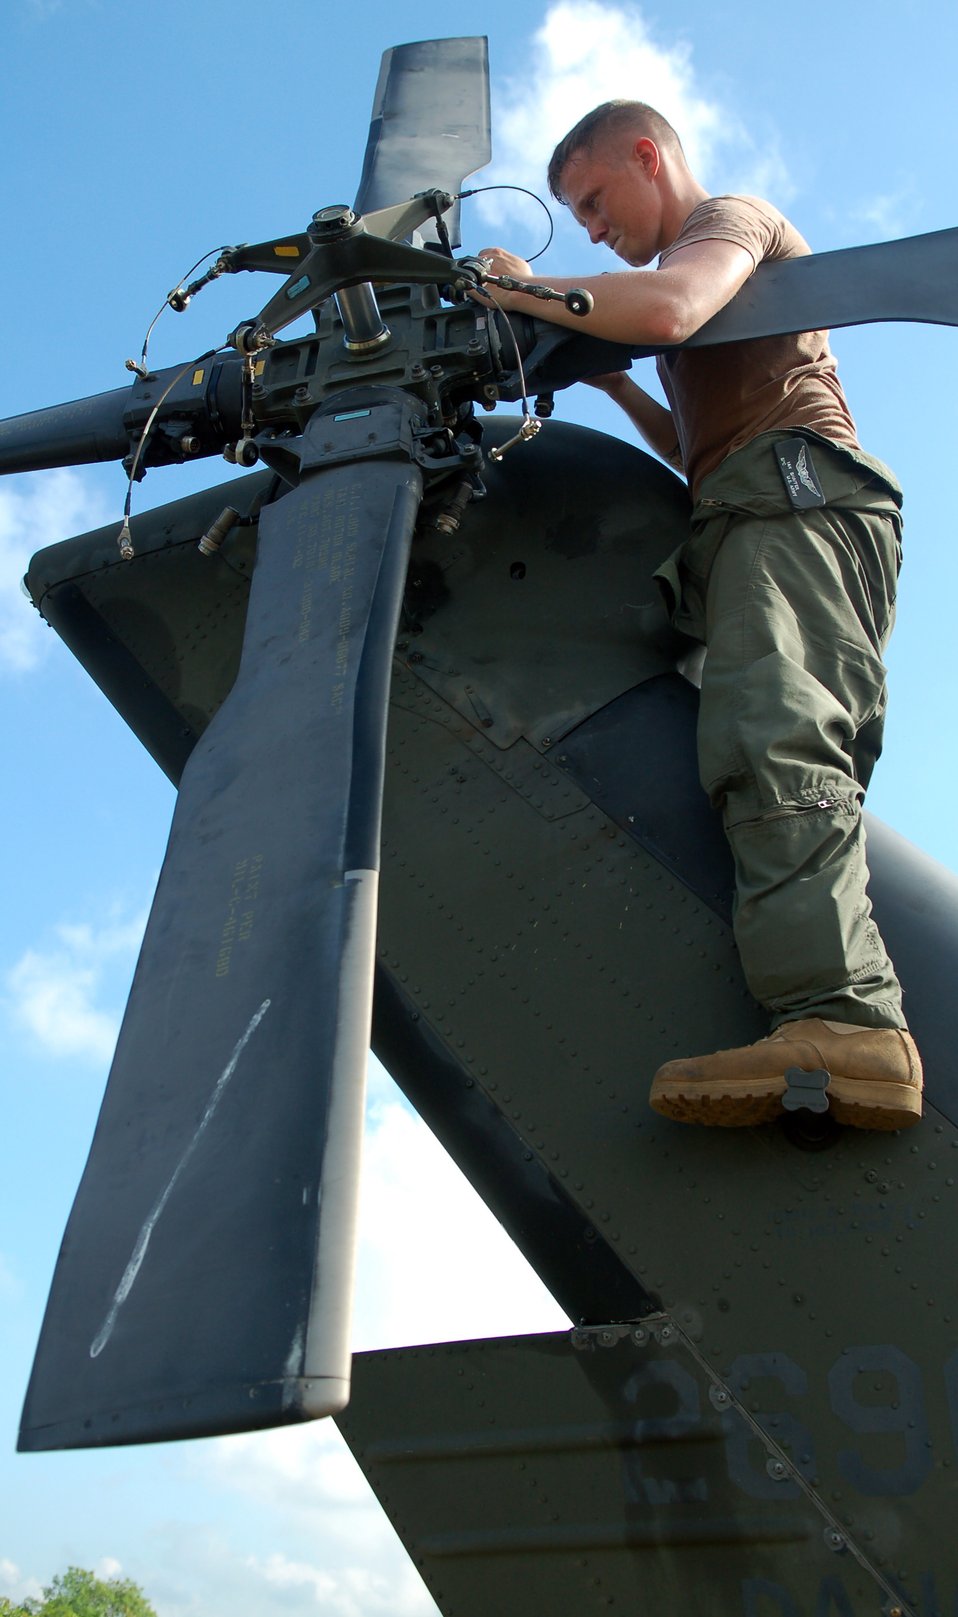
Medical mission becomes primary focus following Noel

Army Spc. Ian Shaffer secures the blades of the tail rotor on an Army UH-60 Blackhawk helicopter at San Isidro Air Base, Dominicn Republic, preparing it for medical relief missions following Tropical Storm Noel. Servicemembers are deployed from Joint Task Force-Bravo at Soto Cano Air Base, Honduras. Specialist Shaffer is with the 1st Battalion, 228th Aviation Regimen.